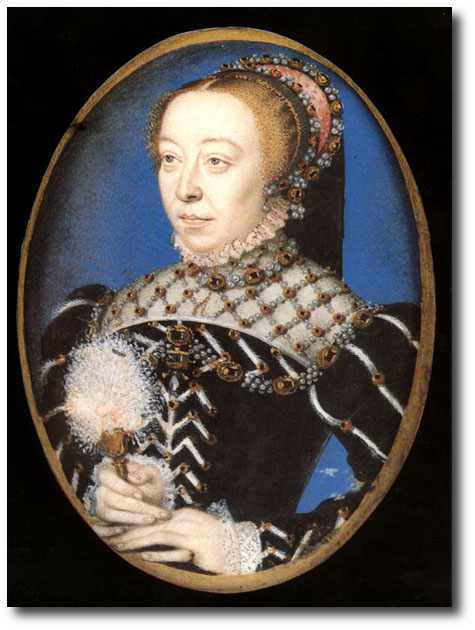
Catherinedemedicishadow